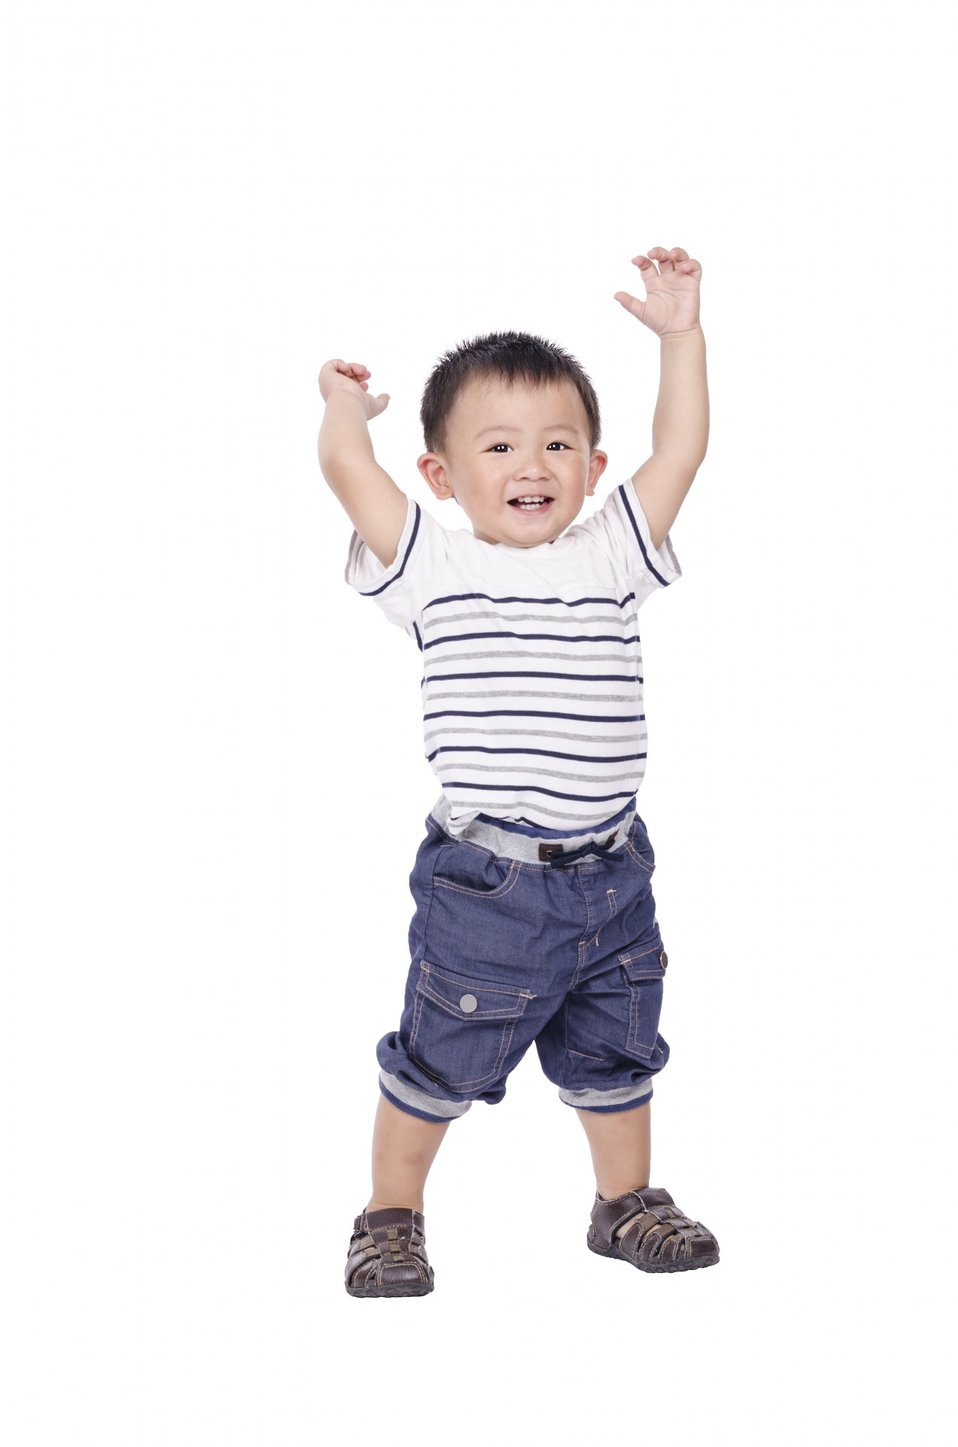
Little boy stand and raise up.